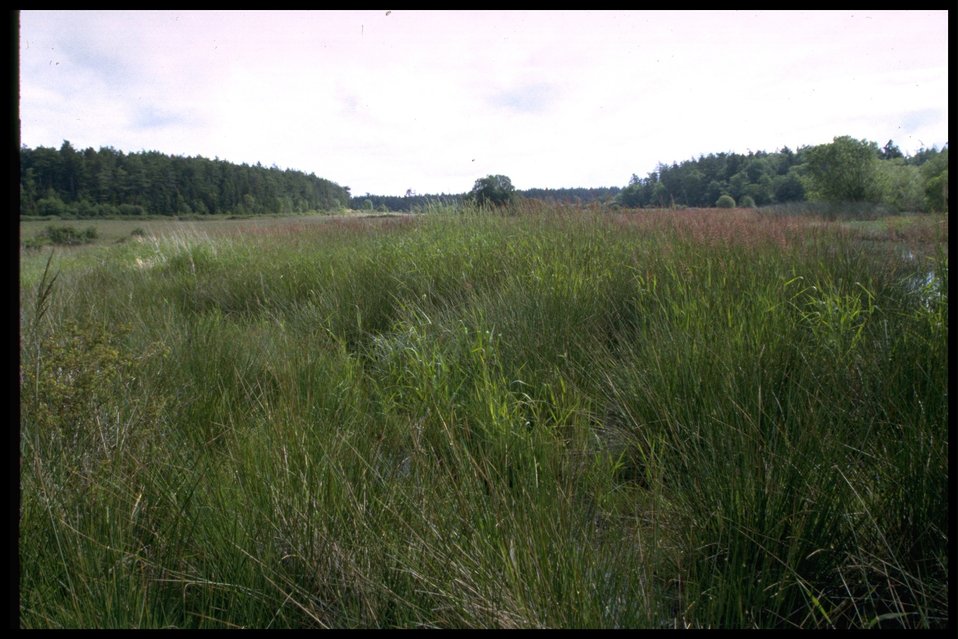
Chadwick Hill Marsh.